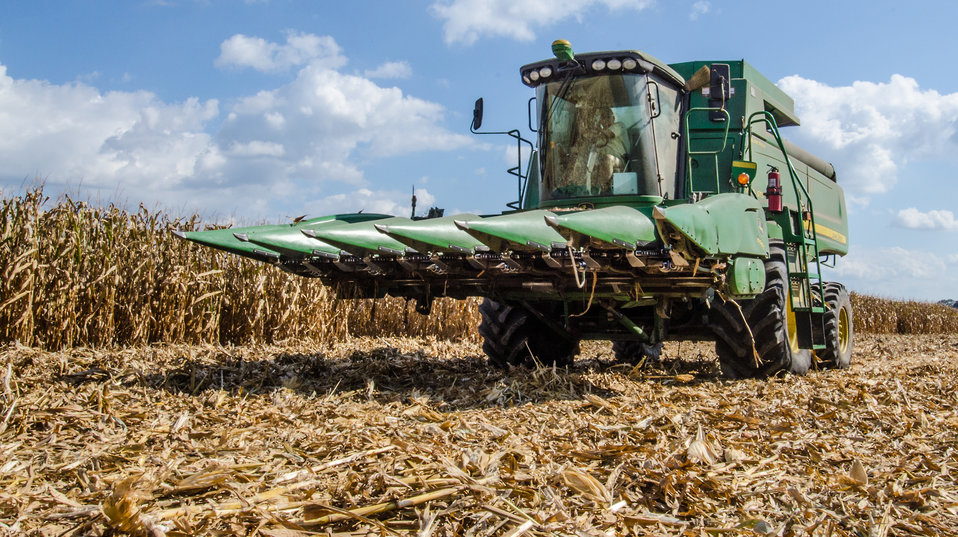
John N. Mills, Jr. drives the farm's smaller six-row corn harvester during the feed corn harvest at the John N. Mills & Sons farm; a family owned business located in the Hanover and King William Counties Virginia, on Friday, Sept. 20, 2013. Pleasant Level Farm was the original farm from a Land Grant from King George III of England to Nicholas Mills in 1725. The original acreage has never left the Mills family name and continues to be farmed by the family.
Now the farm covers 5,744 acres that produce corn, wheat, soybeans, barley, hay, timber, and pastures a large herd of beef cattle. They have been using conservation and stewardship practices since the 1960s. Some of the efficient practices include no-till planting and cover crops to reduce soil erosion and prevent the leaching of nutrients into ground water, as well as livestock stream exclusion. The farm has several conservation easements that aids in the preservation and restoration of wetlands and waterways. For information about the U.S. Department of Agriculture (USDA), please go to www.usda.gov.